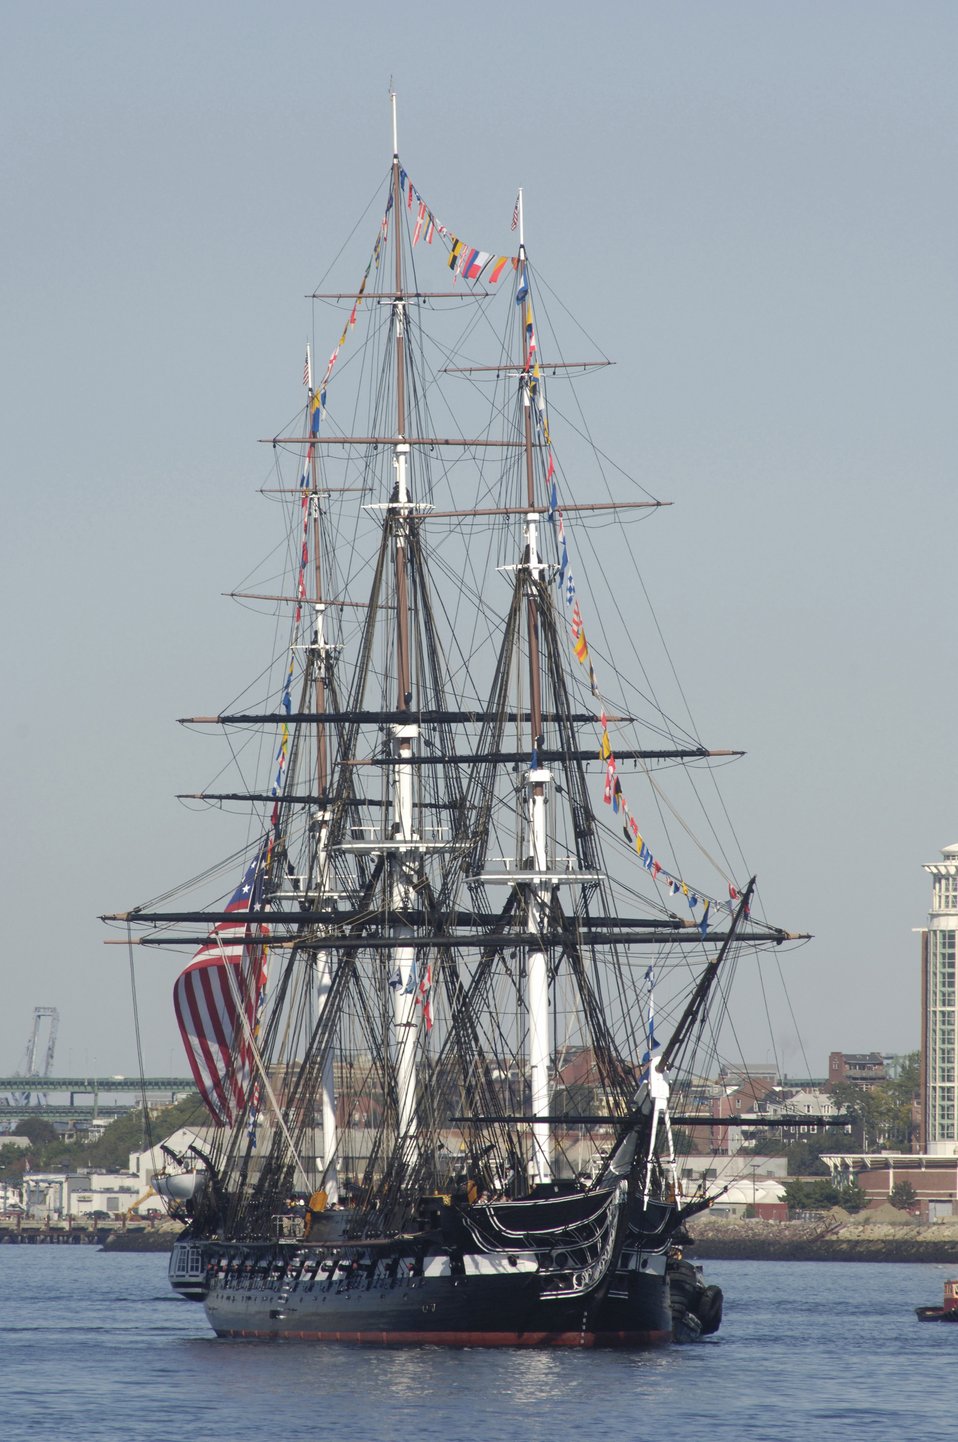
'Old Ironsides' hosts Medal of Honor recipients

The USS Constitution sails past Castle Island in Boston Harbor during a turn-around cruise Sept. 30 for more than 70 Medal of Honor recipients. The Constitution is the oldest commissioned warship afloat. While on board, the Medal of Honor recipients were honored with a Medal of Honor flag presentation. The Medal of Honor is the country's highest military honor, awarded for acts of valor above and beyond the call of duty.